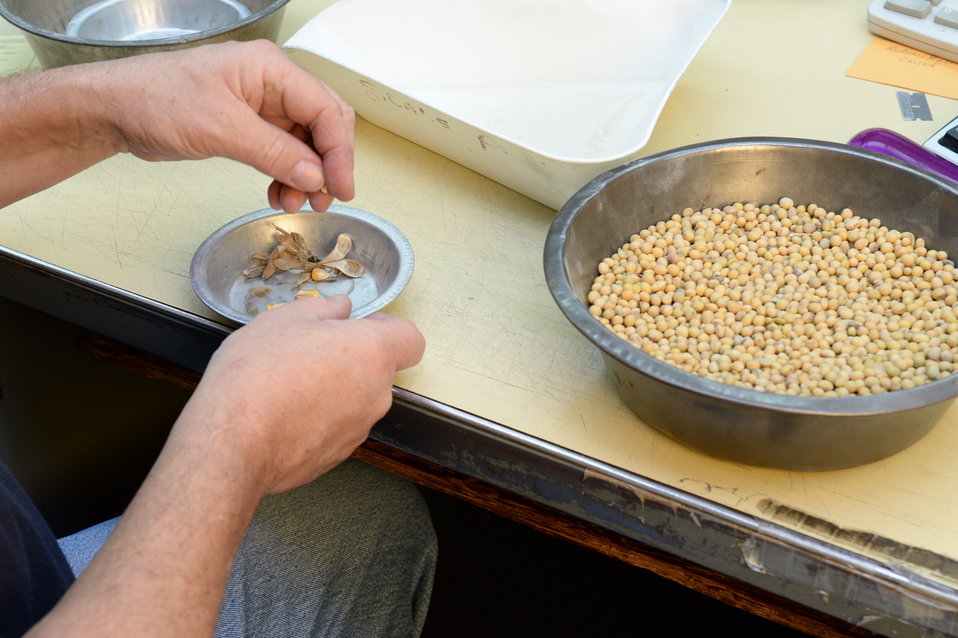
U.S. Department of Agriculture (USDA) Grain Inspection, Packers and Stockyards Administration (GIPSA) Federal Grain Inspection Service (FGIS) employee examines grain samples at the FGIS inspection laboratory in New Orleans, LA on Monday, Nov. 18, 2013.